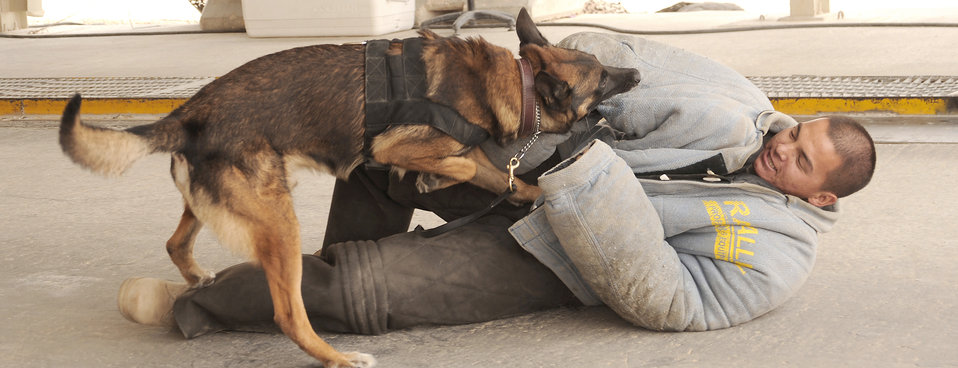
Ouch!

Staff Sgt. Robbie Whaley gets